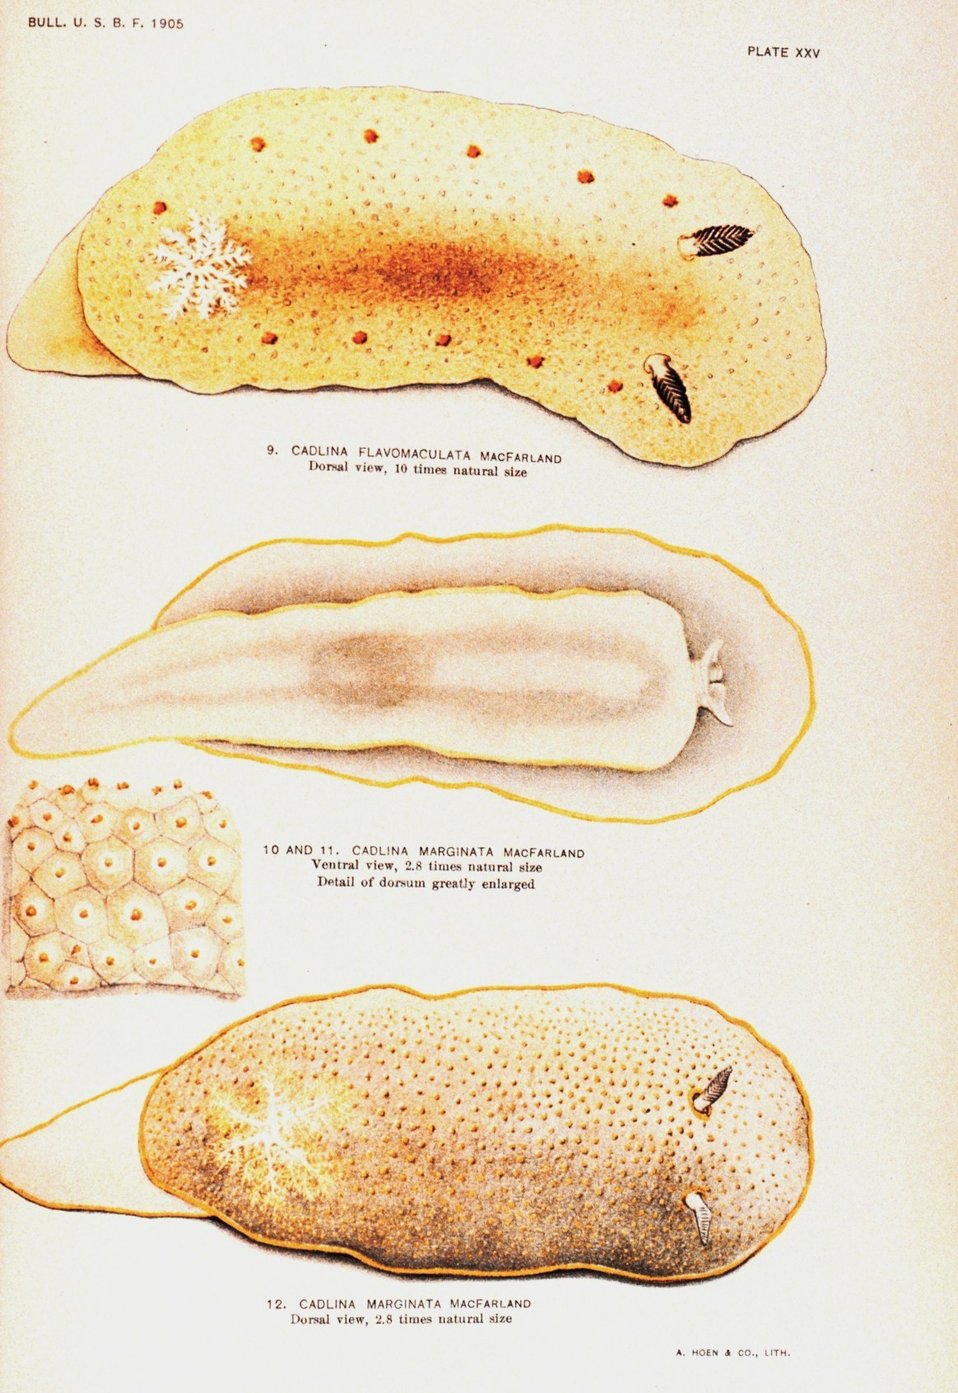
Nudibranchs. 9. Cadlina flavomaculata MacFarland - Dorsal view. 10. Cadlina marginata MacFarland - Ventral view. 11. Detail of dorsum greatly enlarged. 12. Cadlina marginata MacFarland. Painted by Anna B. Nash of the Hopkins Seaside Laboratory. In: 'Opisthobranchiate Mollusca from Monterey Bay ....', Bulletin of the Bureau of Fisheries, Volume 25, 1905. P. 151, Plate XXV.